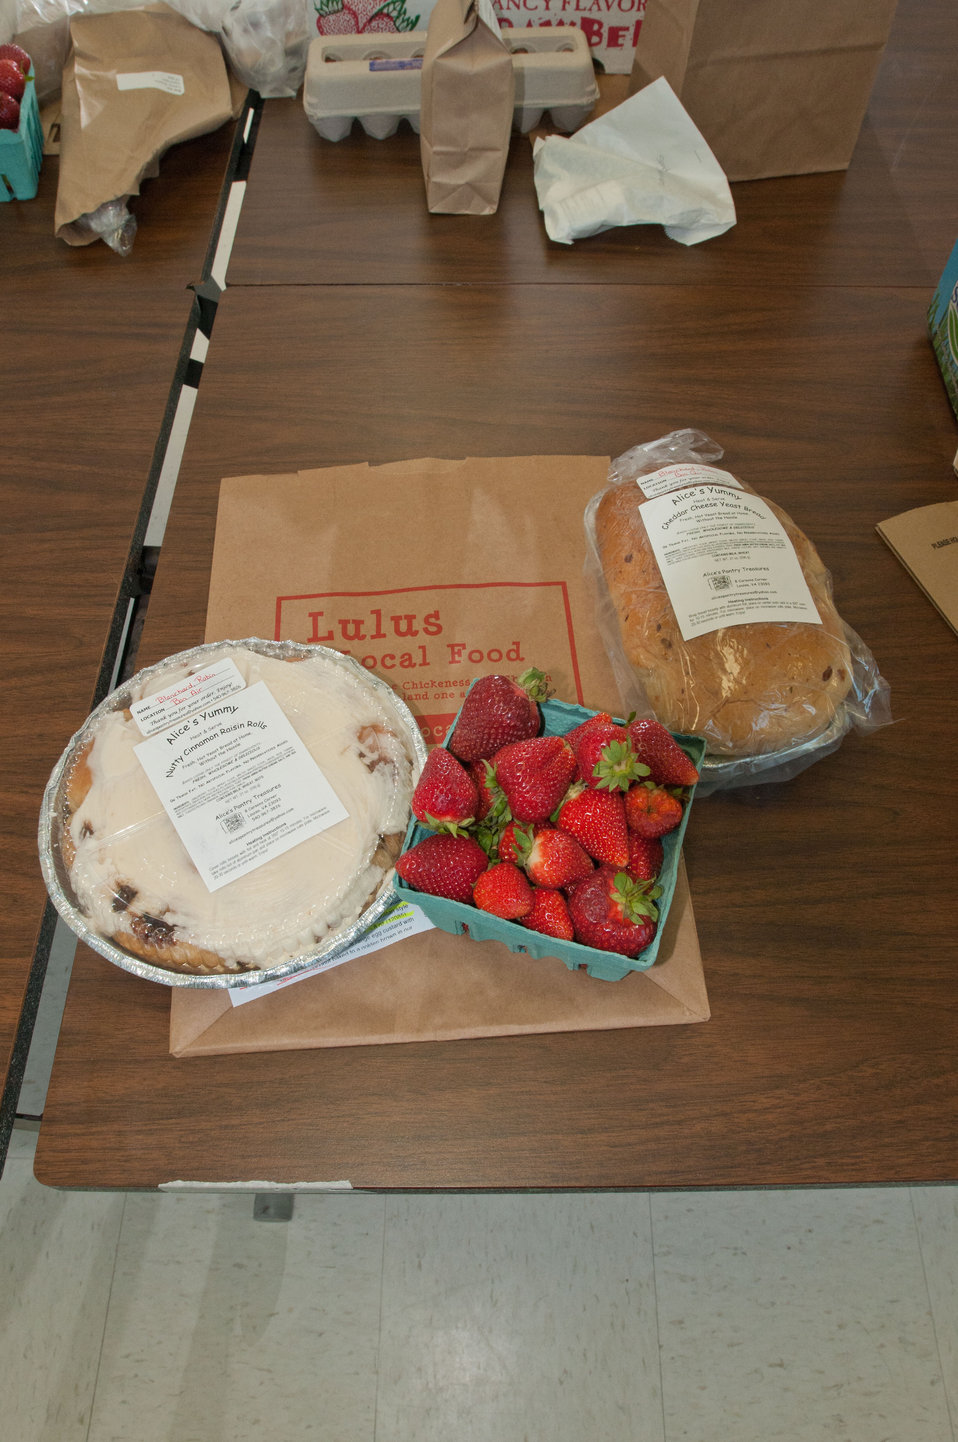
Customized orders at the Bon Air United Methodist Church pick-up point, in Richmond, VA, are the main difference between Fall Line Farms food hub and traditional food cooperatives (that provide identical orders) on, Thursday, May 5, 2011. This is one of several pick-up points in the Richmond area that are open every Thursday afternoon. This local food hub offers a wide variety of household food staples and specialty items. Members can pick their customized orders from an ever changing inventory of fruits, vegetables, meats, soaps, eggs, cheeses, flowers, honey, pastas, sauces, syrups, baked goods, mushrooms, flour and grains. Suppliers post what they have on a Lulus Local Food online listing and customers can make their selection. Every Thursday suppliers deliver orders to, one of several pick-up points, designated by the customers in or around the Richmond area.